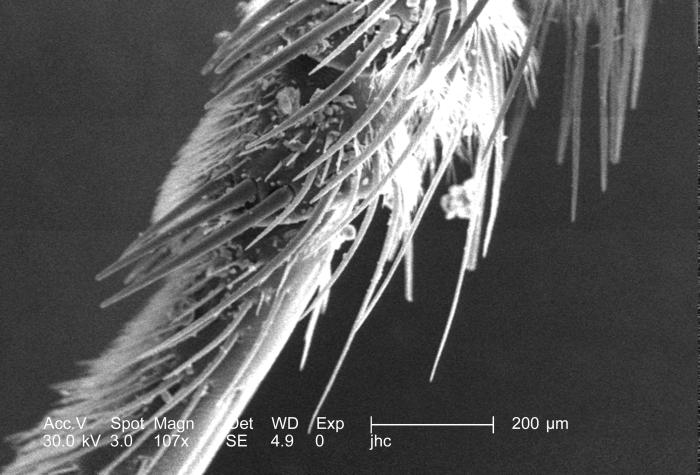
At a low magnification of 107x, this scanning electron micrograph (SEM) depicted some of the morphologic details found on one of the legs of a carpenter bee, Xylocopa virginica. This particular bee was found deceased on the grounds of the Decatur, Georgia suburbs, an area where these insects are quite common.